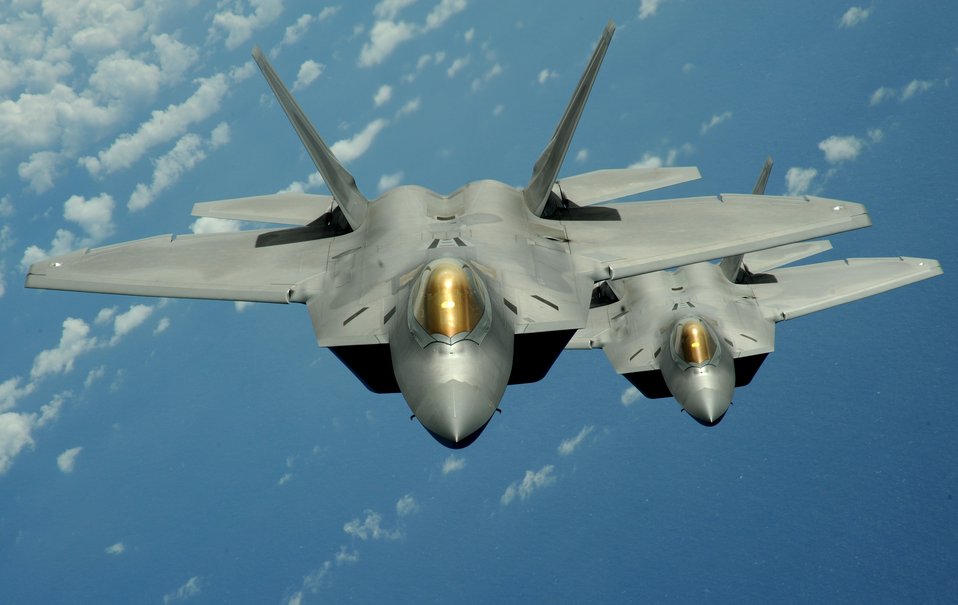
F-22 exchange program

Two F-22 Raptors fly over the Pacific Ocean during a theater security mission. A Royal Australian Air Force pilot assigned to the 90th Expeditionary Fighter Squadron at Andersen Air Force Base, Guam, has had the opportunity to fly the F-22 Raptor as part of a pilot-exchange program.